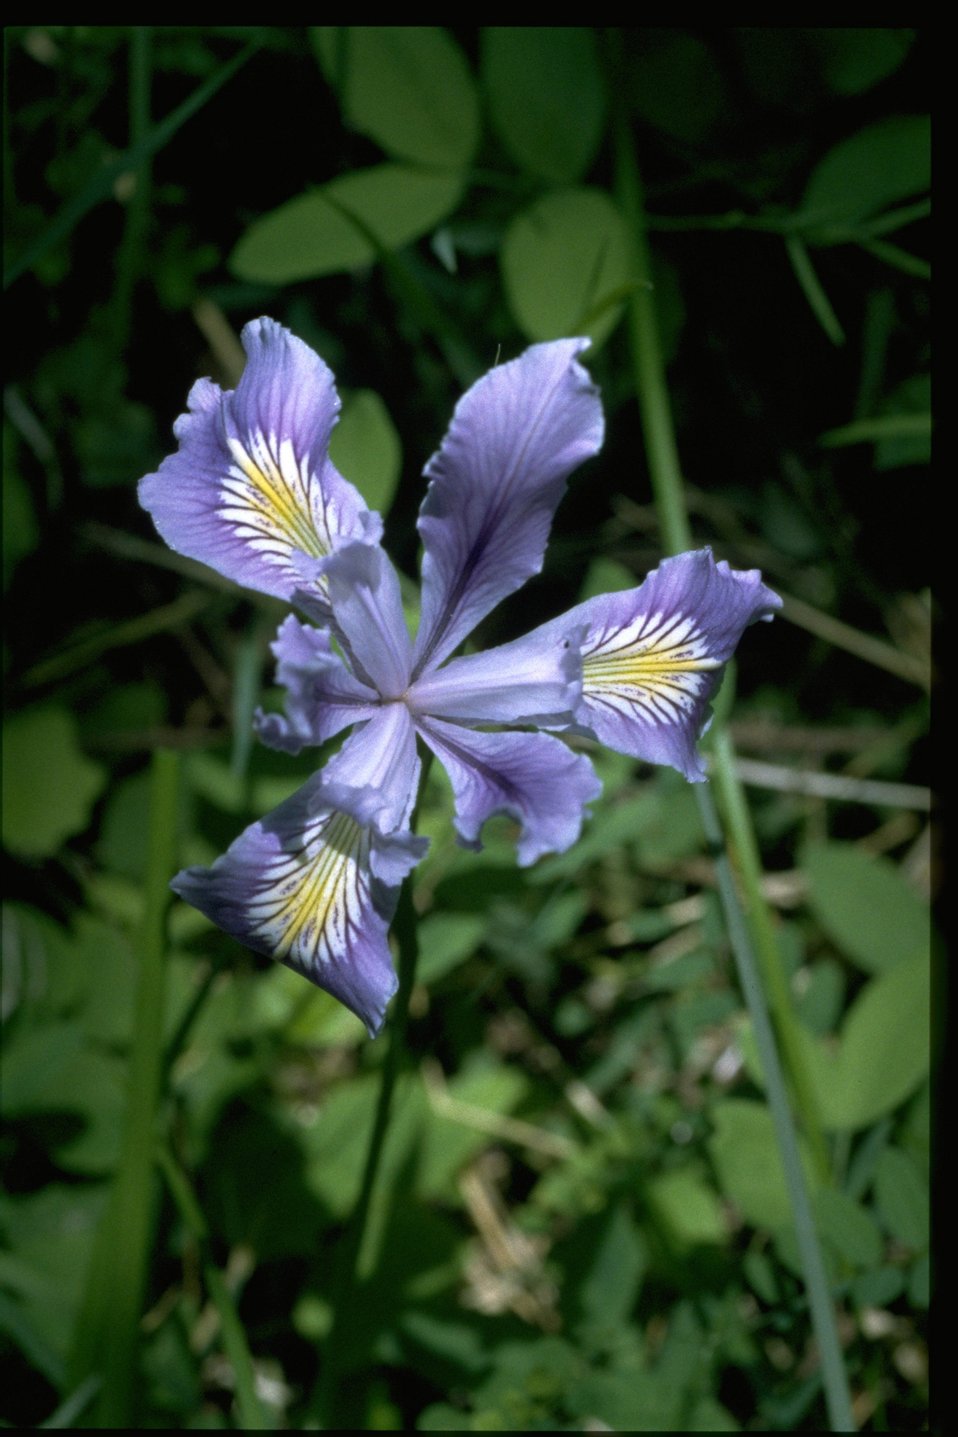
Medium shot of Iris tenax.